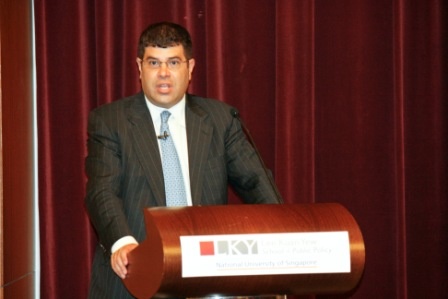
Deputy Secretary Wolin's Trip to the Pacific Rim

On Friday, May 20, 2011, Deputy Secretary Wolin was in Singapore to deliver remarks at a lecture organized by the NUS Lee Kuan Yew School of Public Policy on the United States’ longstanding commitment to welcoming investment from abroad.